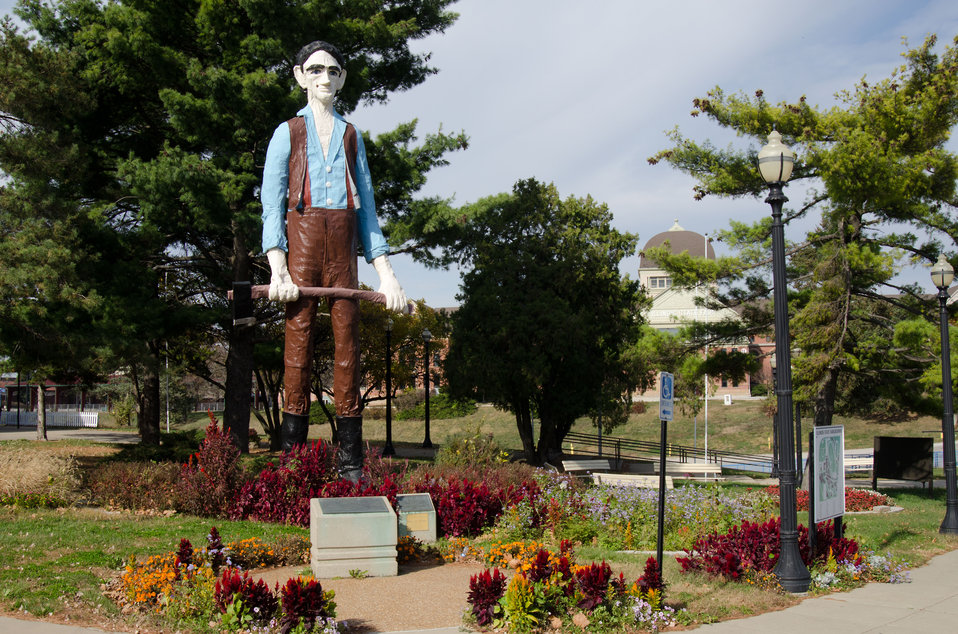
The Illinois State Fair Grounds is where the U.S. Department of Agriculture National Agricultural Statistics Service office (not seen) is located, in Springfield, IL, on Wednesday, November 2, 2011.